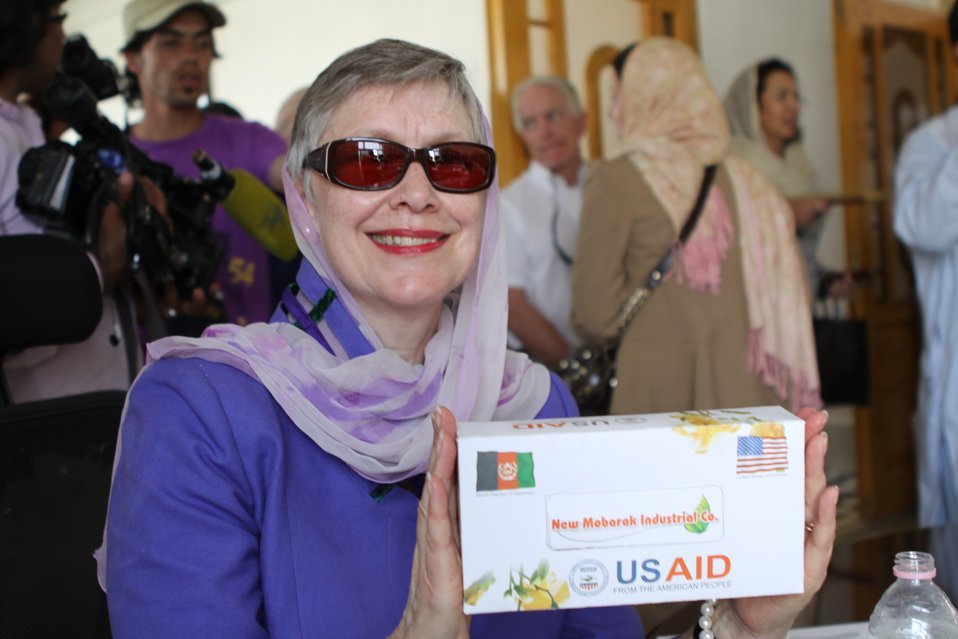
100525 Hirat Marble Conference 862